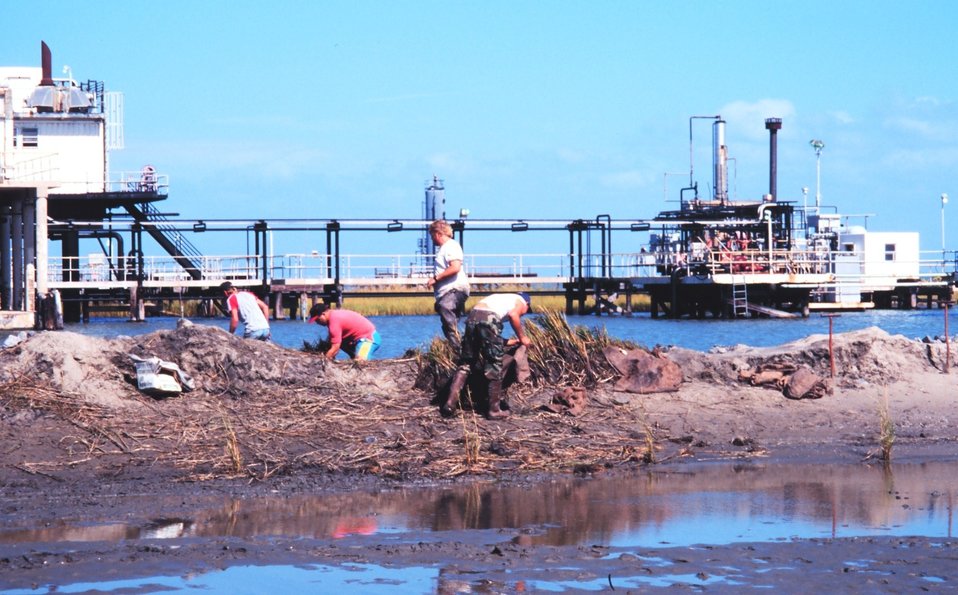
The Greenhill/East Timbalier workers bringing plants into dredge area. Spartina alterniflora was planted by hand to create new marsh.